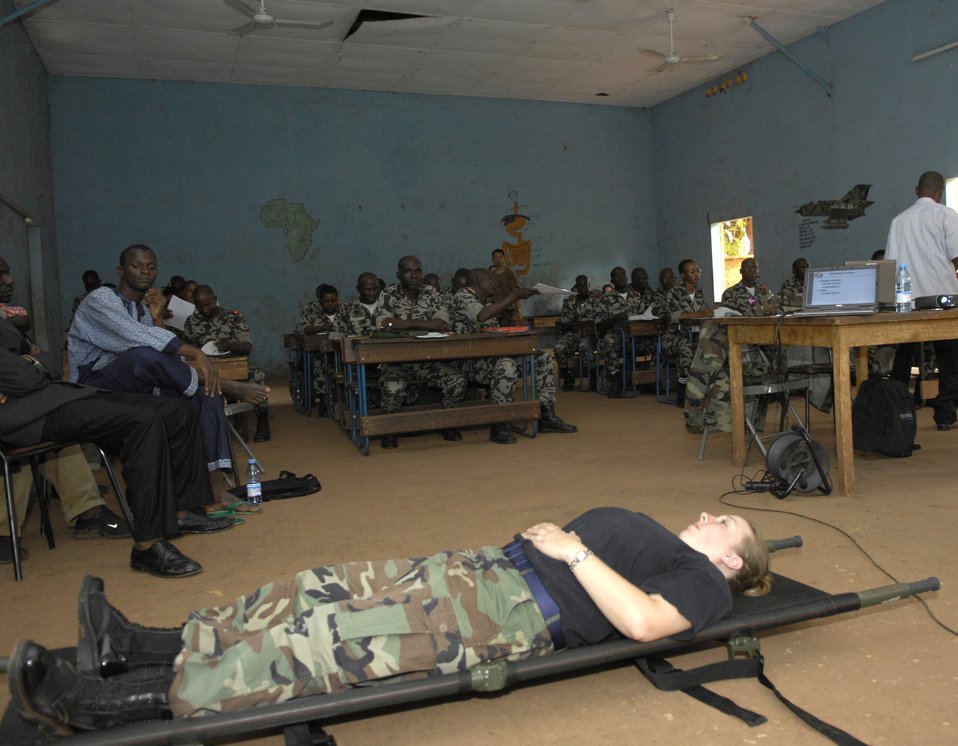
Malians learn life-saving medical techniques

Staff Sgt. April Jnoffin lies on litter during mass casualty training for the Malian military at MEDFLAG 08, July 15. More than 90 servicemembers deployed to Bamako for MEDFLAG 08, a multi-national medical training exercise designed to enhance medical capabilities and readiness for U.S. and African Forces. Sergeant Jnoffin is deployed from the 31st Medical Group, Aviano Air Base, Italy.